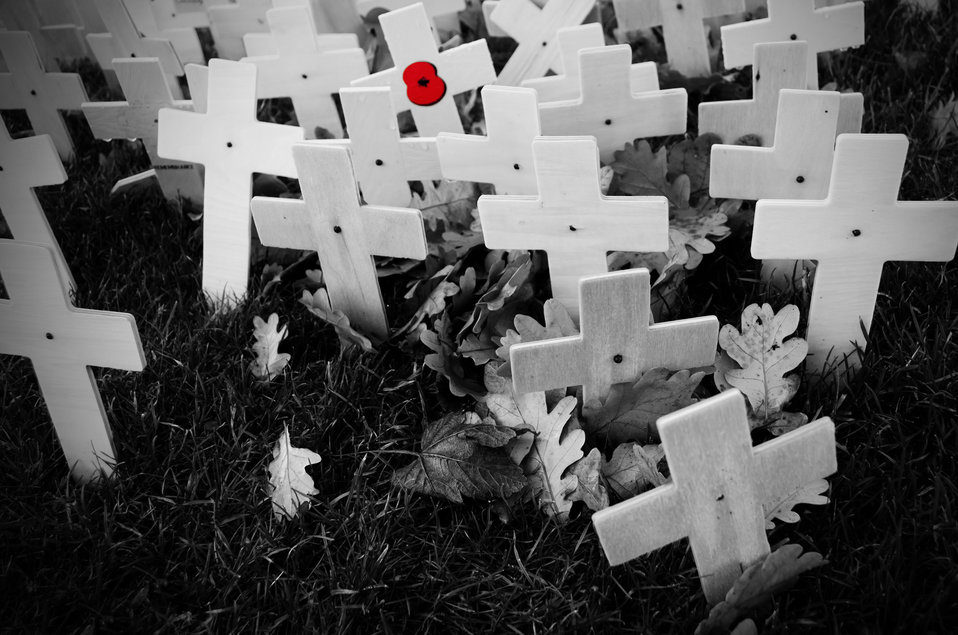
For all heroes - black and white.